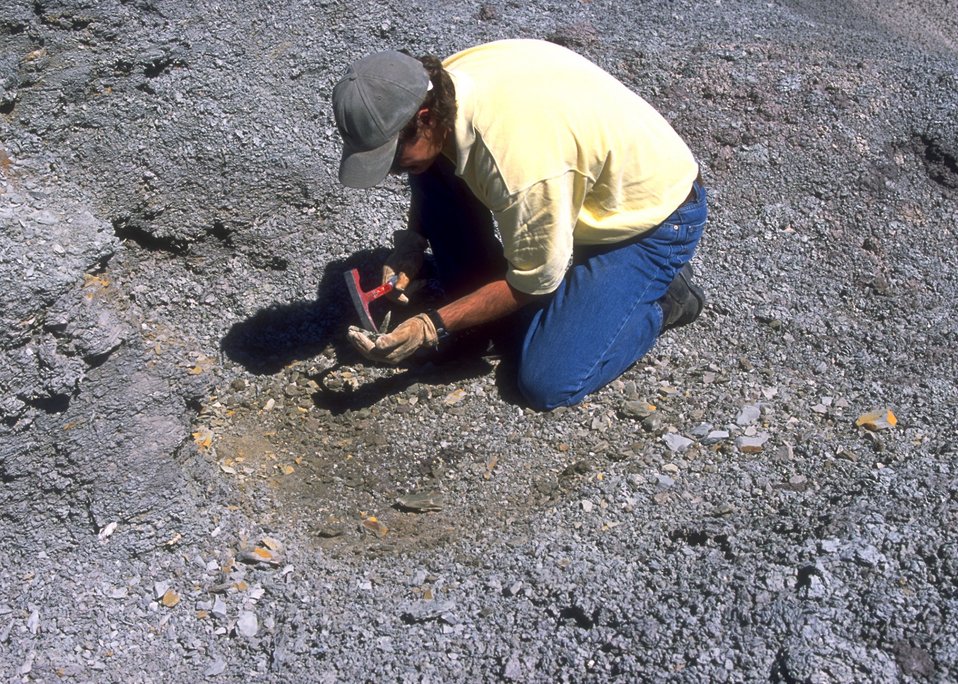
Dave Baker, WFO, examining fossils at the Cedar Ridge Paleo area, Lander Field Office.